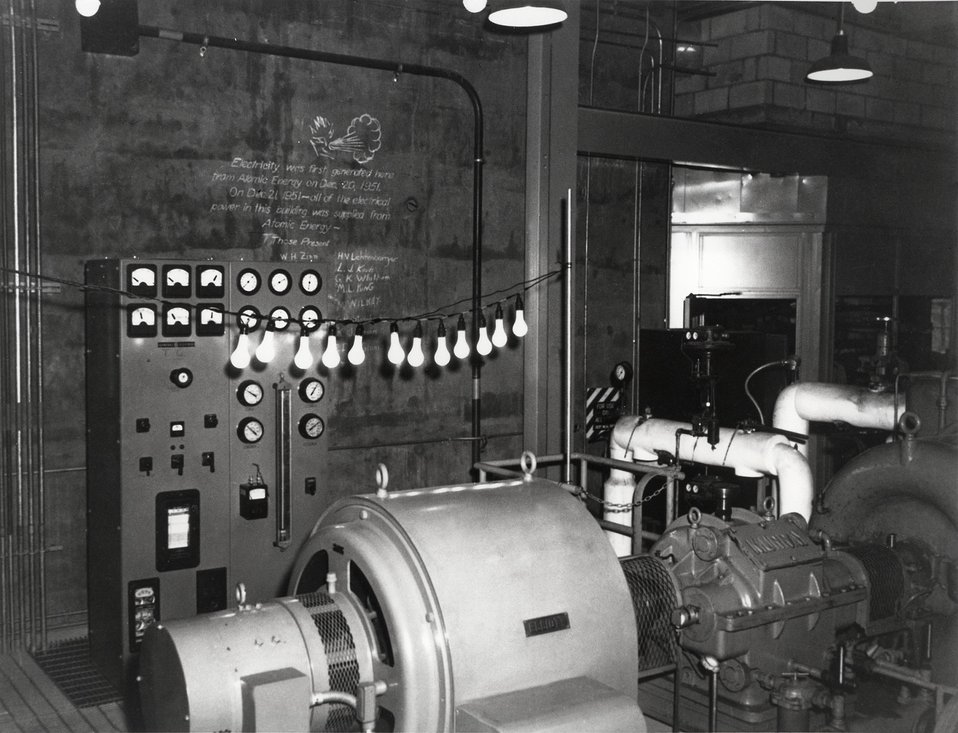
December 20, 1951, Argonne's EBR was used to generate electrical power. This was the first known production of electricity using the heat from nuclear fission
c.1951